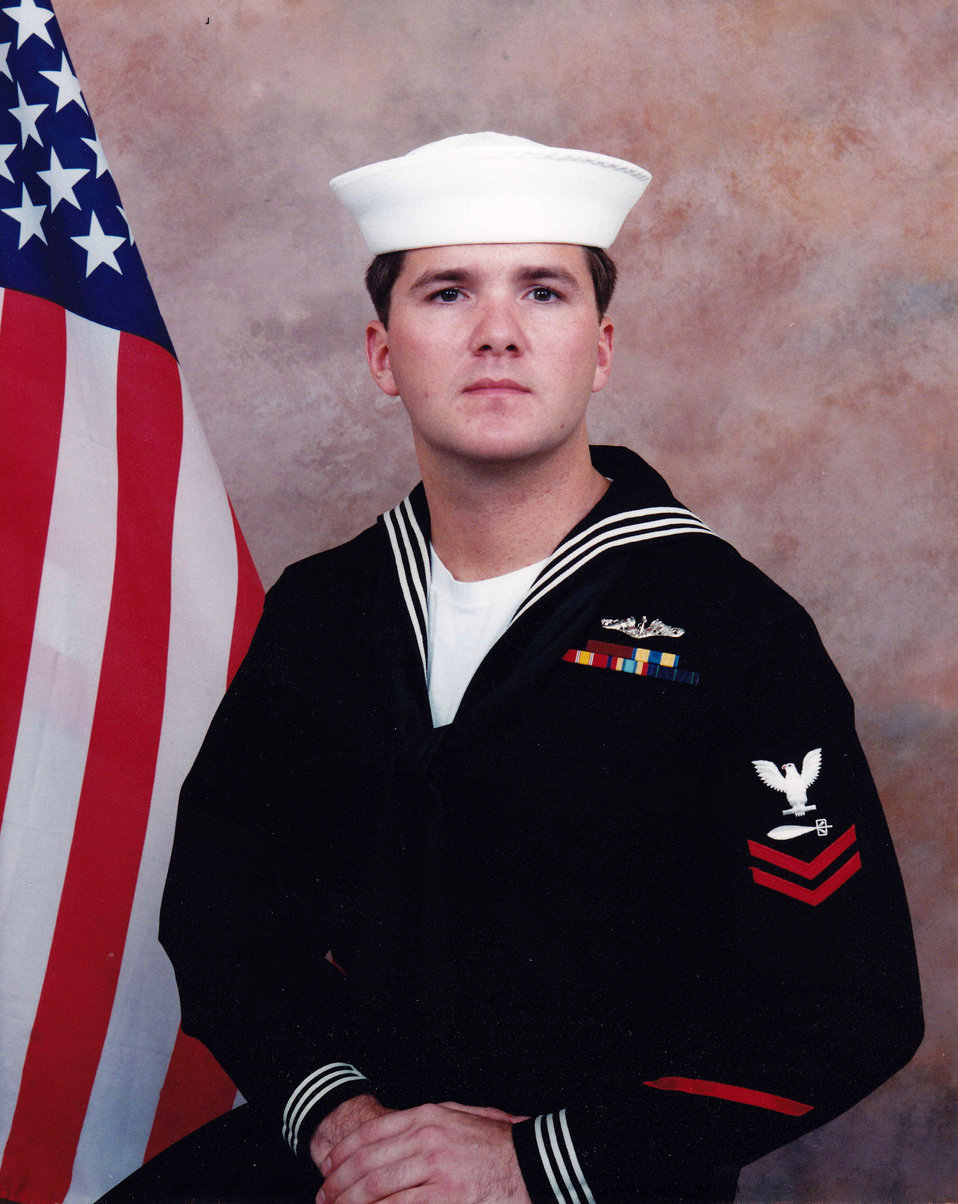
Mark Ahrens, the National Fish Hatchery Manager at Spring Creek National Fish Hatchery in Region 1 in Underwood, Washington, served in the U.S. Navy from October 1987 to April 1992 and on Submarines on the USS Pasadena SSN752 from October 1988 to April 1992. At the end of service he was a TM-2 Petty Officer/Torpedoman's Mate 2nd Class. He says of his military career: “I was fortunate to see the world while in the Navy and visited many places including Japan, Australia, Panama Canal, Virgin Islands, Puerto Rico and Guam to name a few. It was character-building service to say the least.”